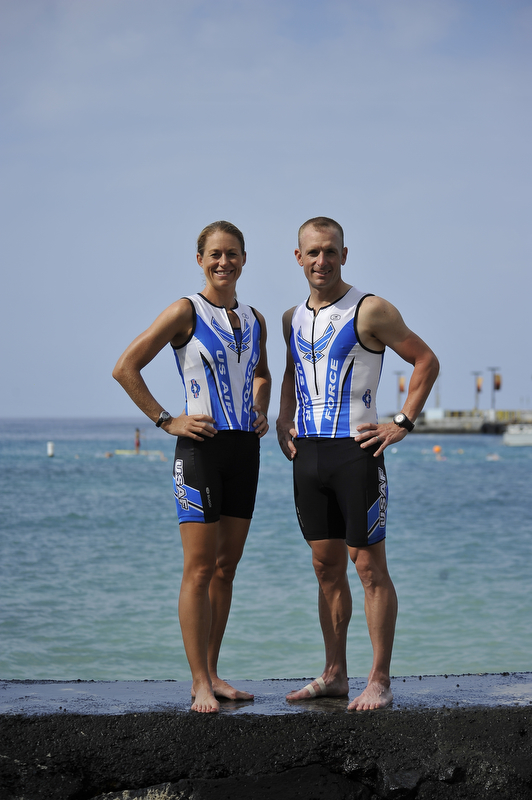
2010 Ironman World Championship

The Air Force Ironman team of Capt. Jaime Turner and Maj. Scott Poteet are at Kona, Hawaii, Oct. 7, 2010, for the 2010 Ironman World Championships. The Airmen were representing their service in the military division of the grueling race that is both mentally and physically challenging. Major Poteet is assigned to the U.S. Air Force Academy in Colorado Springs, Colo. Captain Turner is a C-17 Globemaster III pilot at Joint Base Charleston, S.C.